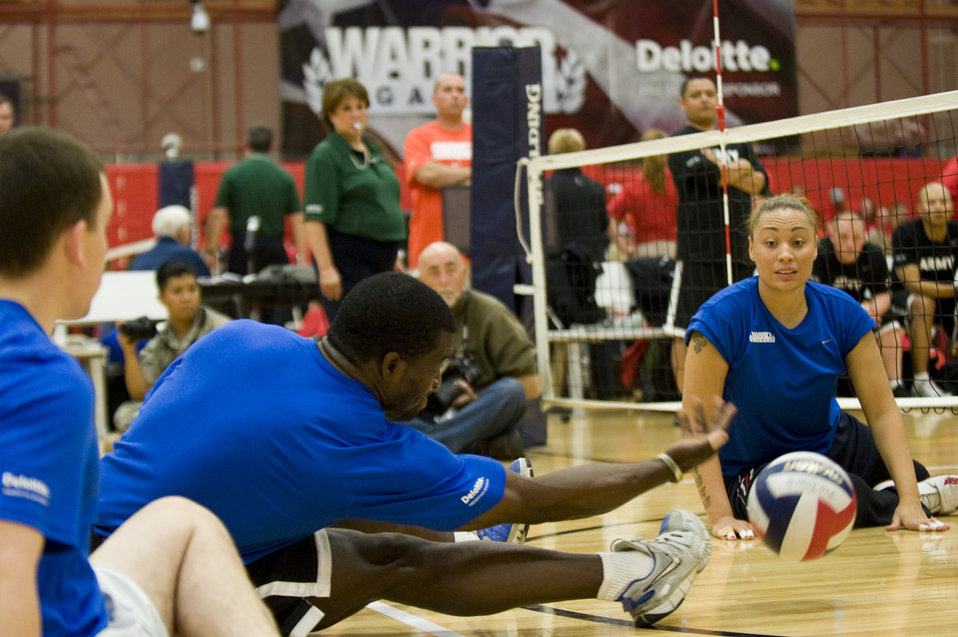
Army marches through Air Force

Members of the Air Force sitting volleyball team reach for the volleyball as it's spiked onto their side by the Army May 19, 2011, during the the second annual Warrior Games in Colorado Springs, Colo. The Army won the series with two straight games.